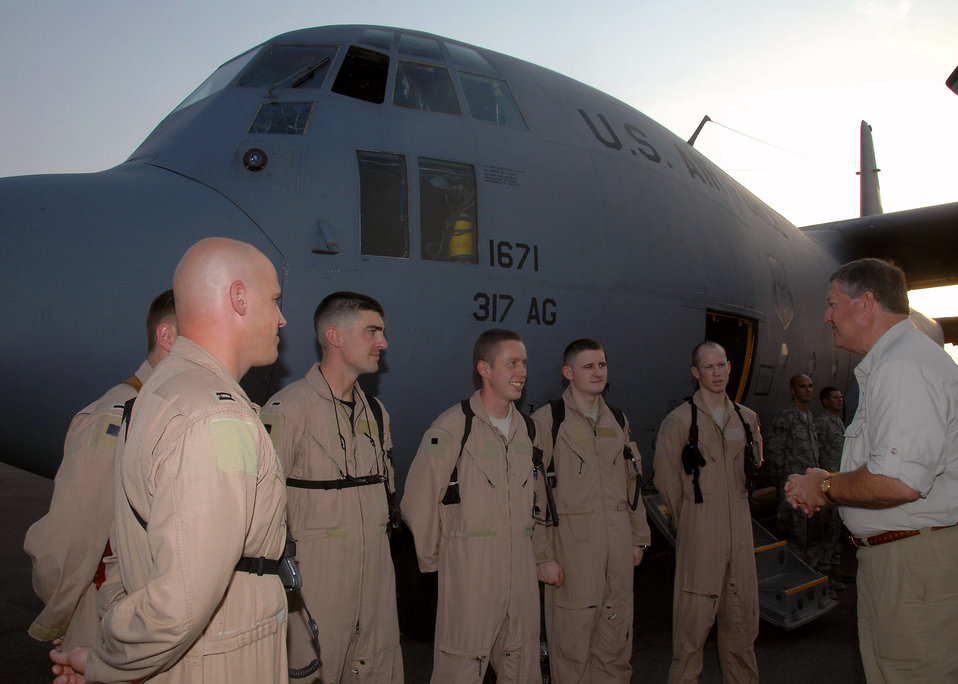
386th AEW welcomes SECAF

Secretary of the Air Force Michael B. Donley talks with a C-130 Hercules aircrew from the 737th Expeditionary Airlift Squadron Oct. 14 at an air base in Southwest Asia. Secretary Donley visited with Airmen from the 386th Air Expeditionary Wing, coalition partners and sister services during his visit.